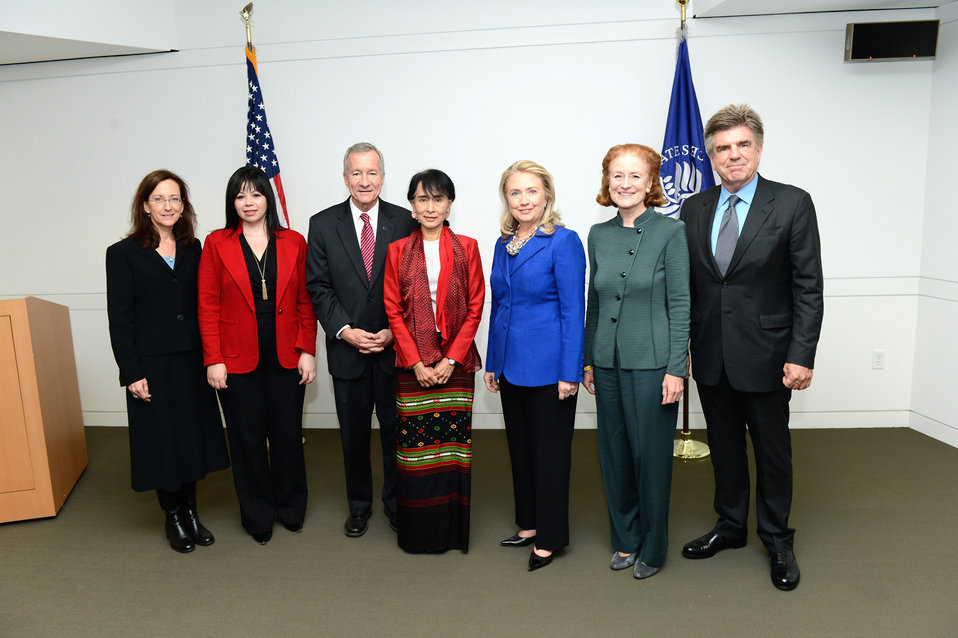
Secretary Clinton With Daw Aung San Suu Kyi

U.S. Secretary of State Hillary Rodham Clinton poses for a photo with Daw Aung San Suu Kyi, Chair of the National League for Democracy and Member of Parliament from Kawmhu Constituency, at the U.S. Institute of Peace in Washington, D.C., September 18, 2012.